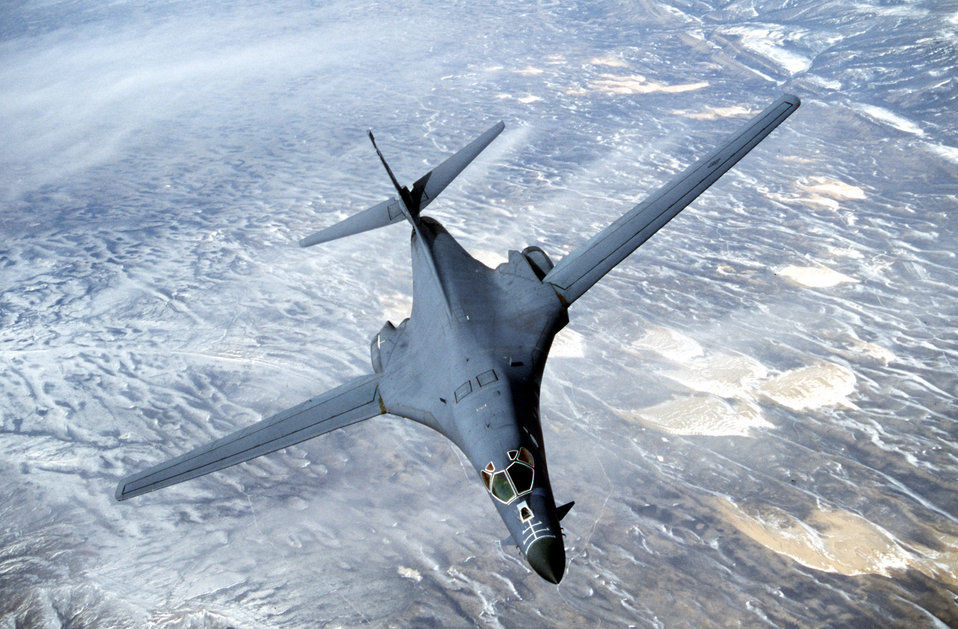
Open skies of Wyoming

OVER WYOMING -- The B-1B Lancer is a long-range strategic bomber, capable of flying intercontinental missions without refueling, and then penetrate present and future sophisticated enemy defenses. It can perform a variety of missions, including that of a conventional weapons carrier for theater operations.